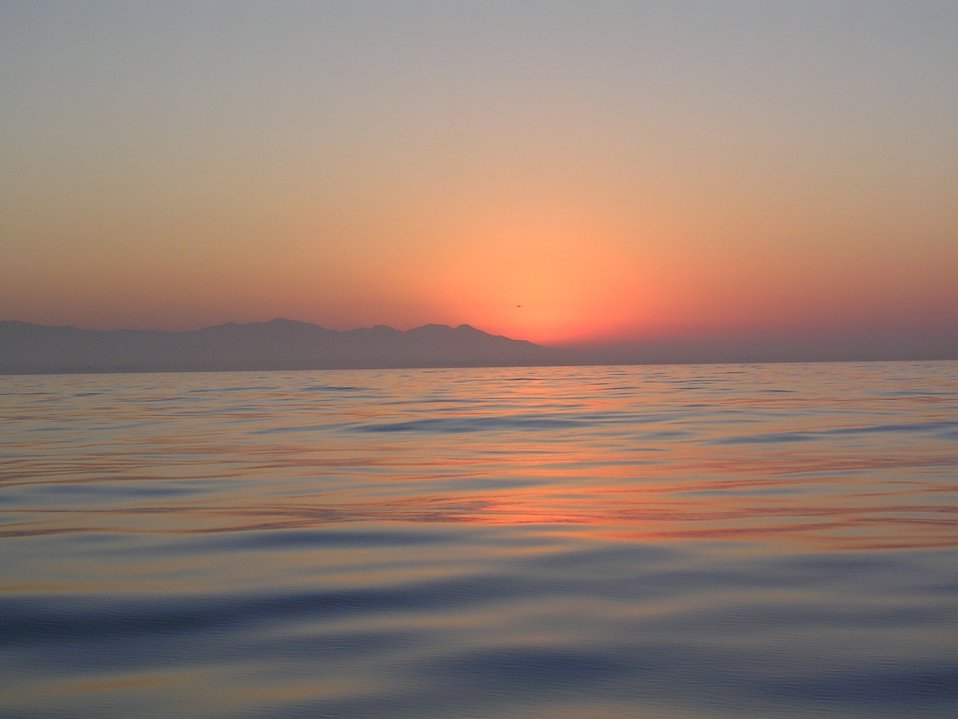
Sunrise as seen from the contract fishery research vessel SEAHORSE.